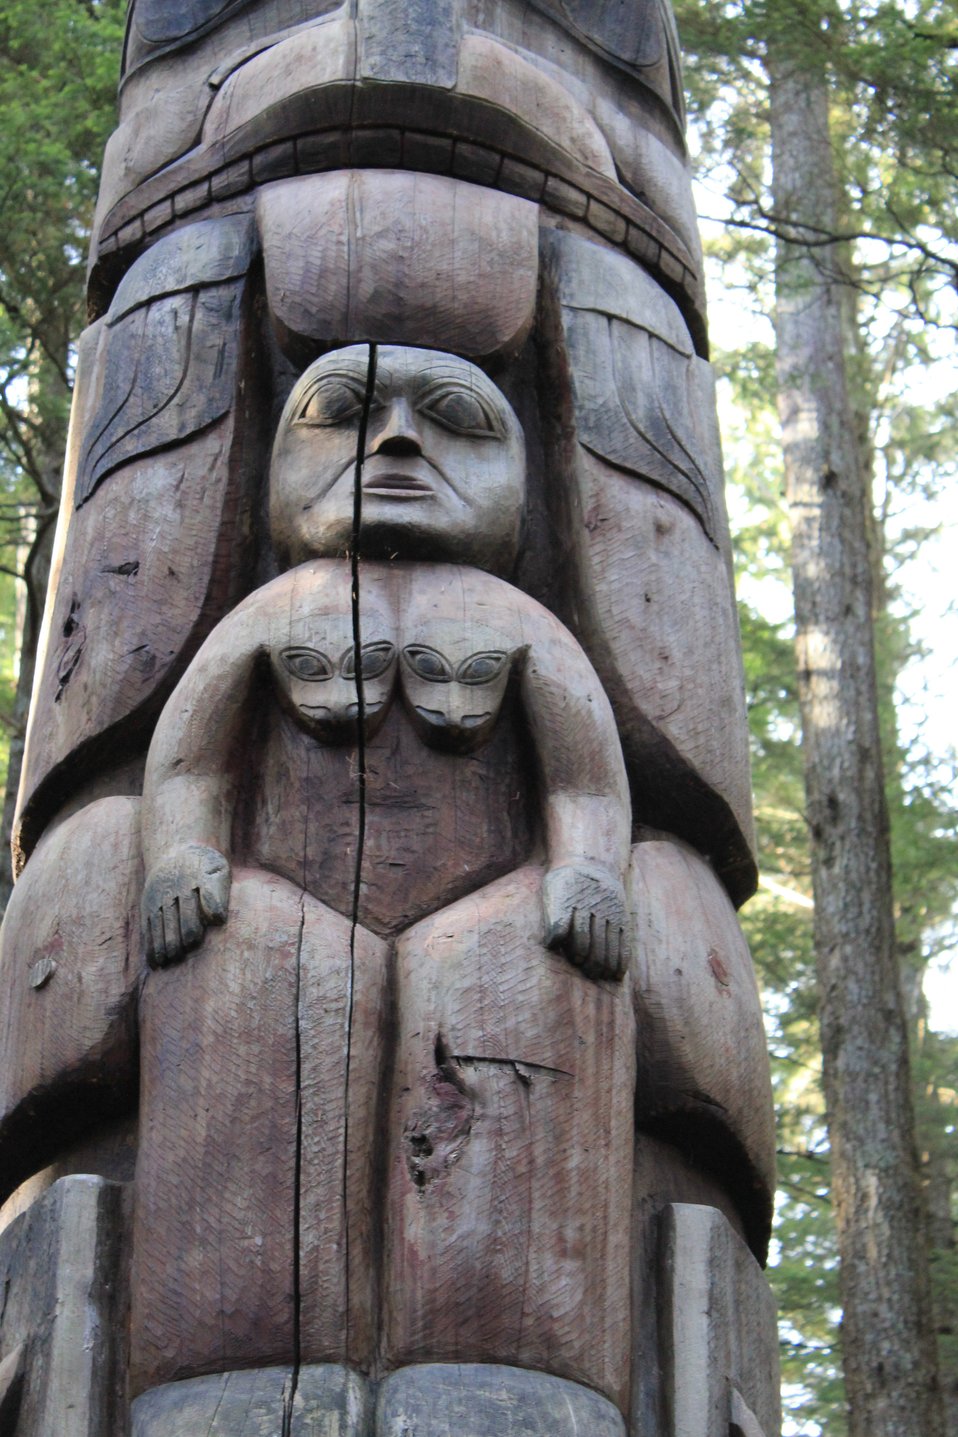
Intricate carving of totem pole. Every creature depicted is part of a complex story.